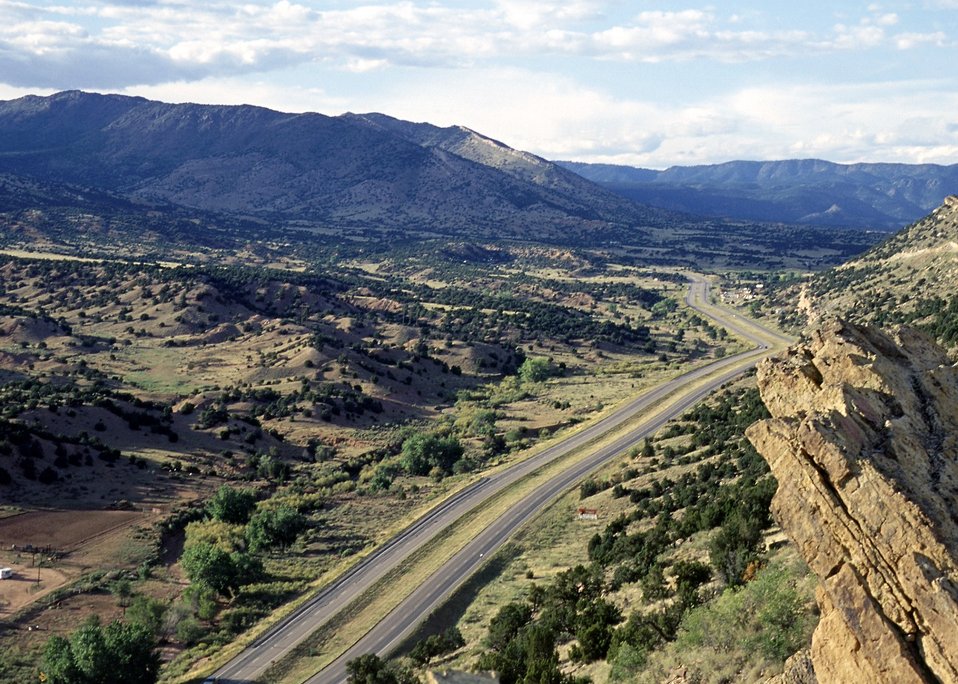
Skyline Drive